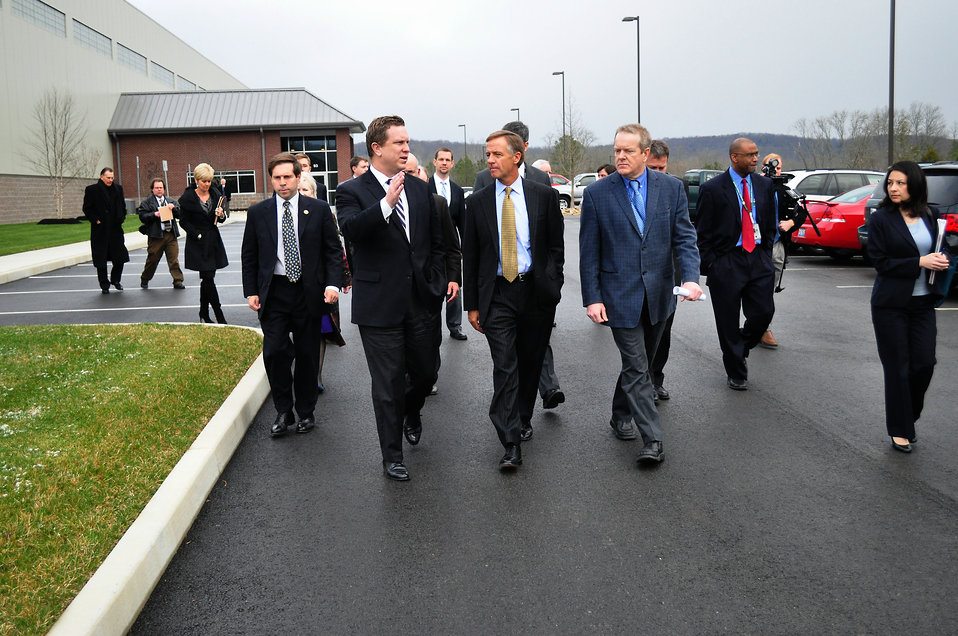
Carbon Fiber Technology Facilty Open House Oak Ridge Tennessee

13-025 DOE photo Lynn Freeny